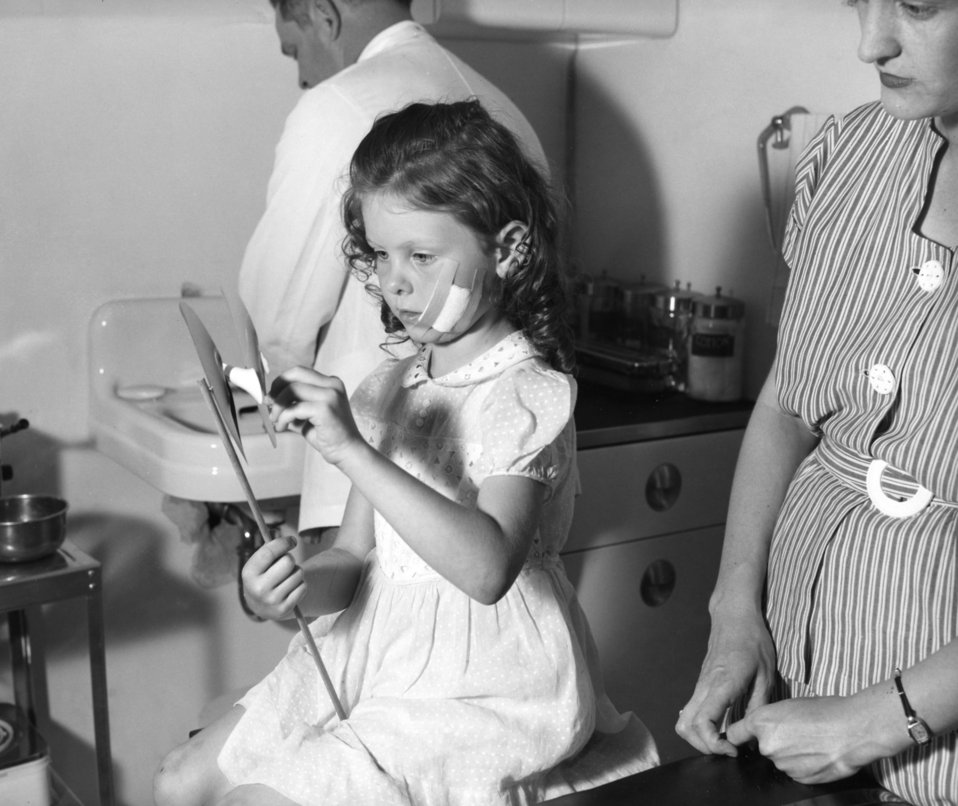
This photograph depicts a female child who was wearing a bandage in a doctor's office after she'd been being bitten by an animal suspected of being rabid.Postexposure prophylaxis (PEP) is indicated protocol to be followed for persons who'd possibly been exposed to a rabid animal. Possible exposures include animal bites, or mucous membrane contamination with infectious tissue, such as saliva. PEP should begin as soon as possible after an exposure. There have been no vaccine failures in the United States (i.e. someone developed rabies) when PEP was given promptly and appropriately after an exposure.